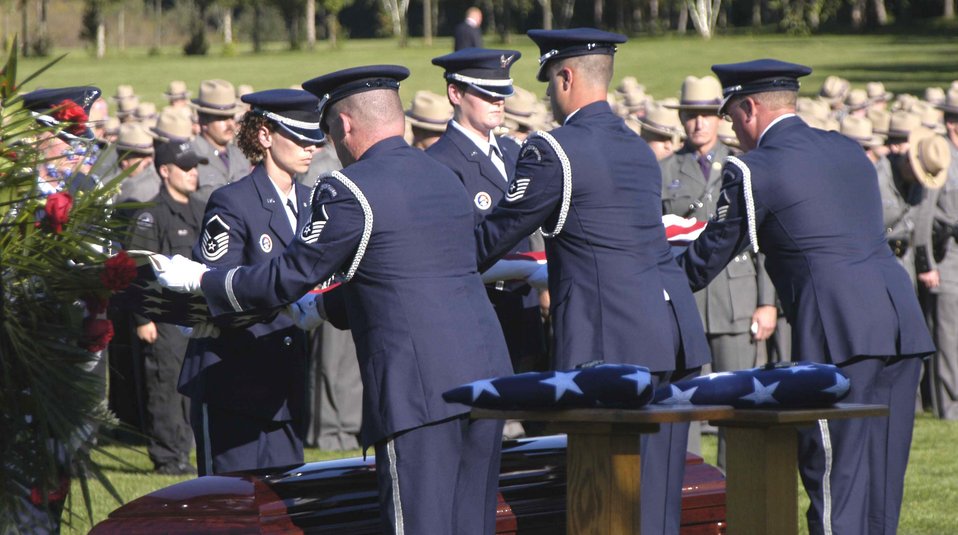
Airmen pay tribute to fallen guardsman

Airmen from the New York Air National Guard's 109th Airlift Wing Honor Guard lift the flag from Master Sgt. Joseph Longobardo's casket Sept. 11. Sergeant Longobardo, a guardsman with the 109th Security Forces Squadron, was a New York state policeman killed in the line of duty Sept. 3 while participating in the manhunt for a fugitive.